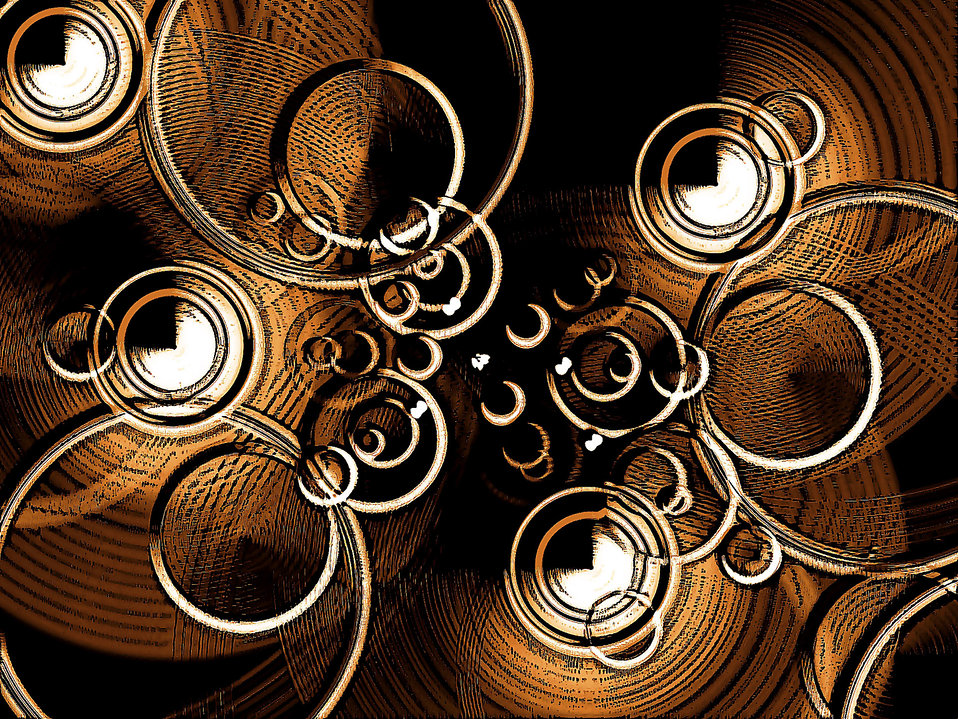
Background 239

Background.